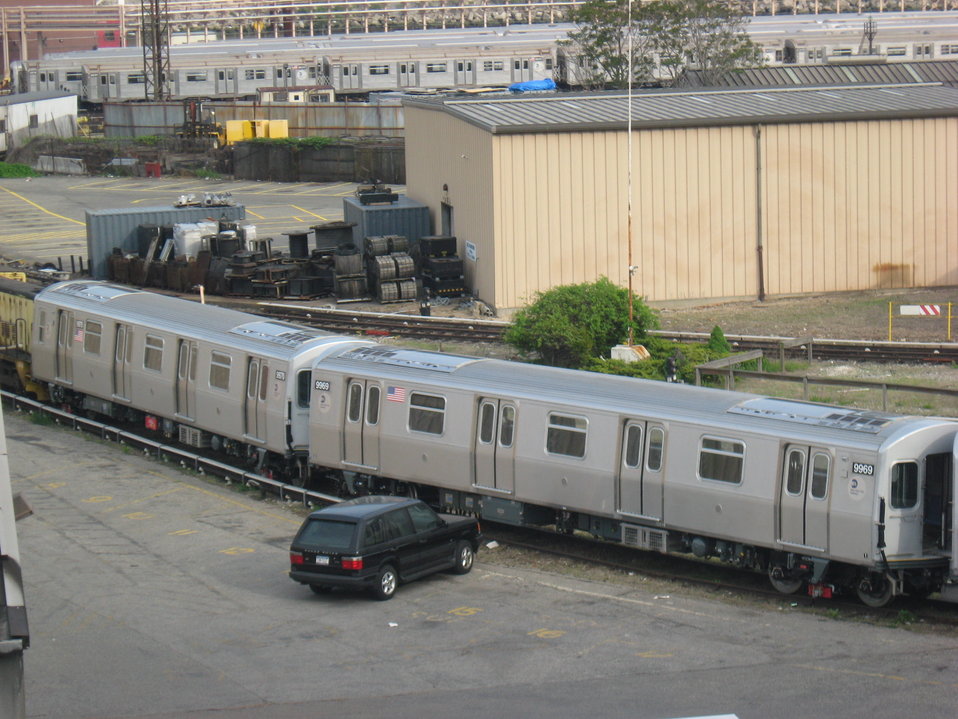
part of the last set...